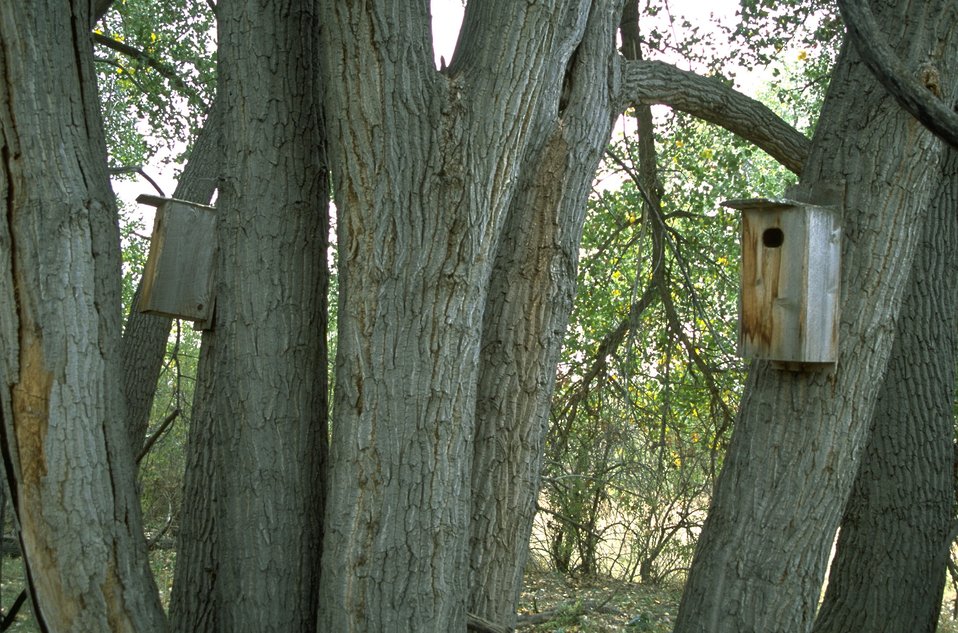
Wood duck nest boxes at Howrey Island Recreation Area